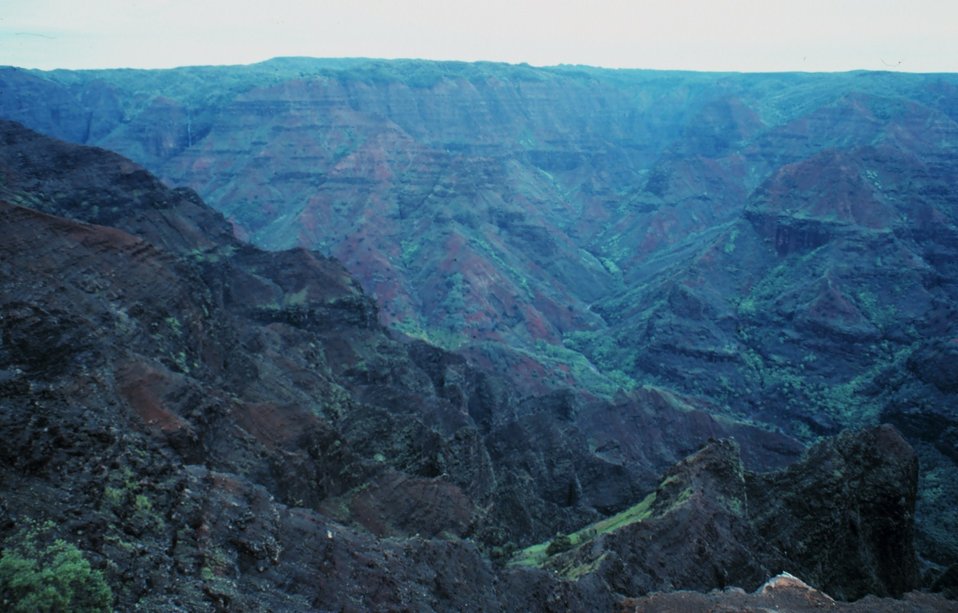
Waimea Canyon - the Grand Canyon of the Pacific